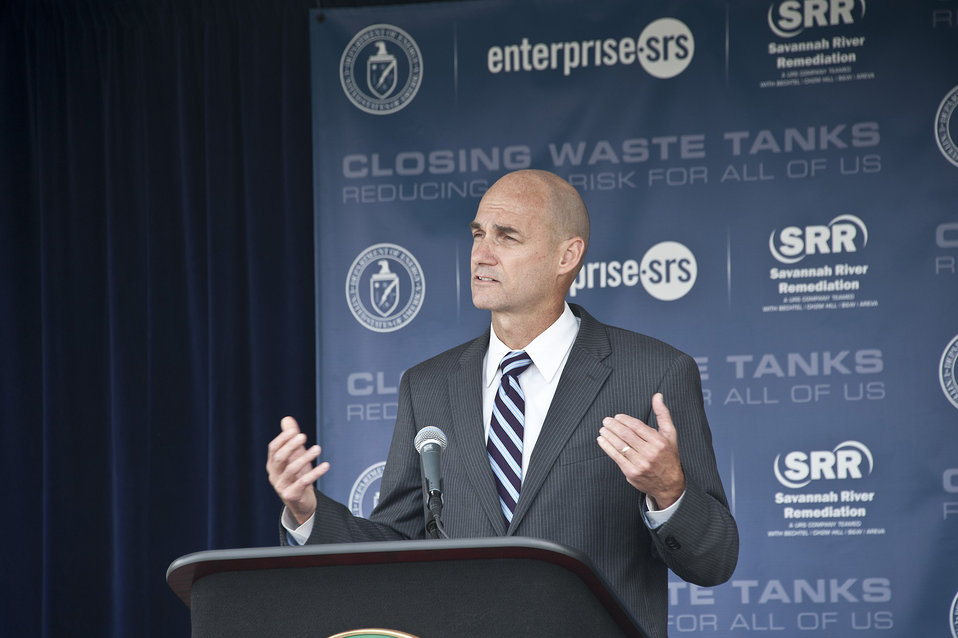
Thomas P. D’Agostino, Undersecretary for Nuclear Security and Administrator, NNSA speaking at the formal tank closure celebration in H Area